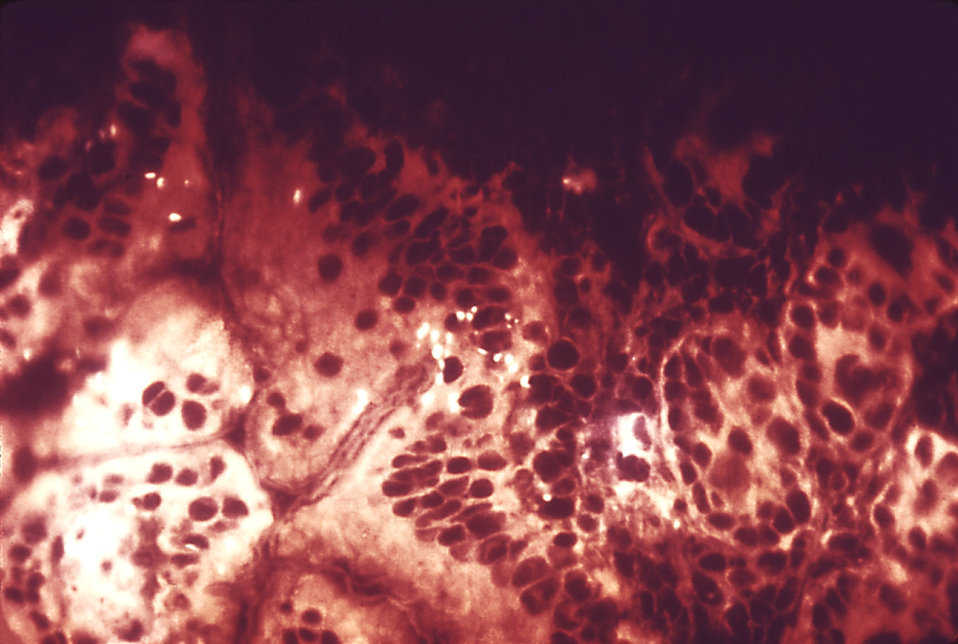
This micrograph reveals 2nd stage shigellosis progression; the Shigella bacteria have penetrated the intestinal mucosa.